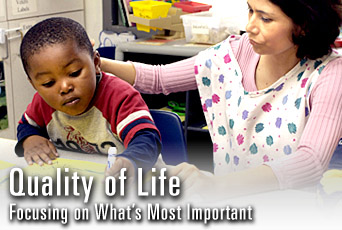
Air Force leaders address quality of life issues, changes

Quality of life continues to be one of the top three priorities for the Air Force. Airmen can still expect high-caliber quality of life programs, such as this child development center, that will take care of them and their families despite the changes being made within the service.